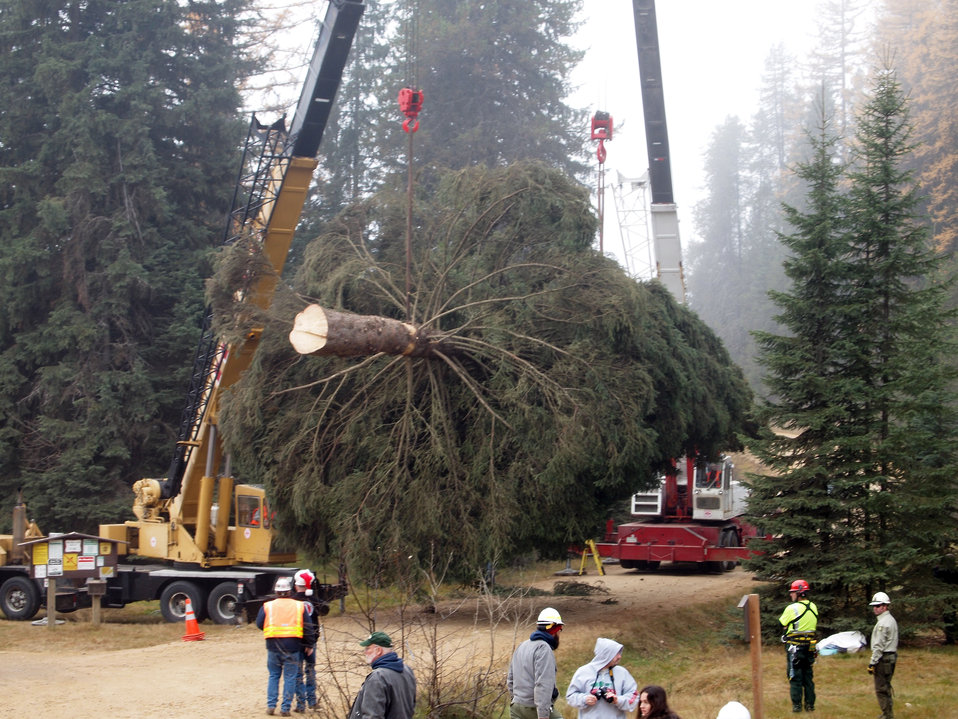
Colville tree3

The 88-foot Engelmann spruce selected as the 2013 Capitol Christmas Tree is hoisted onto a flatbed truck, where it will be secured for the 5,000-mile journey across the country.